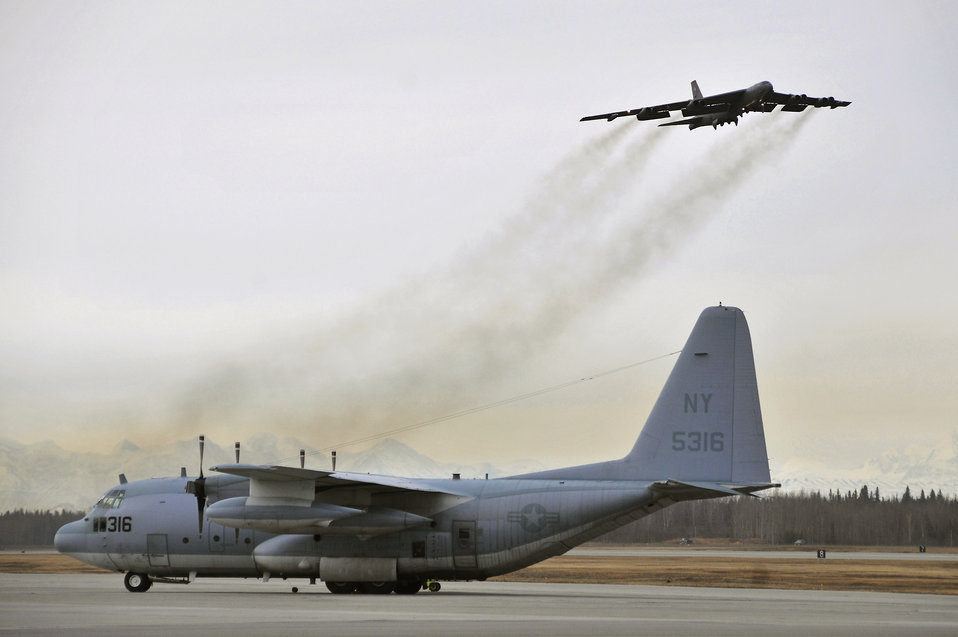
Red Flag-Alaska takes off

A B-52H Stratofortress launches during Red Flag-Alaska 10-2, April 19, 2010, at Eielson Air Force Base, Alaska. The B-52 is assigned to Barksdale AFB, La.